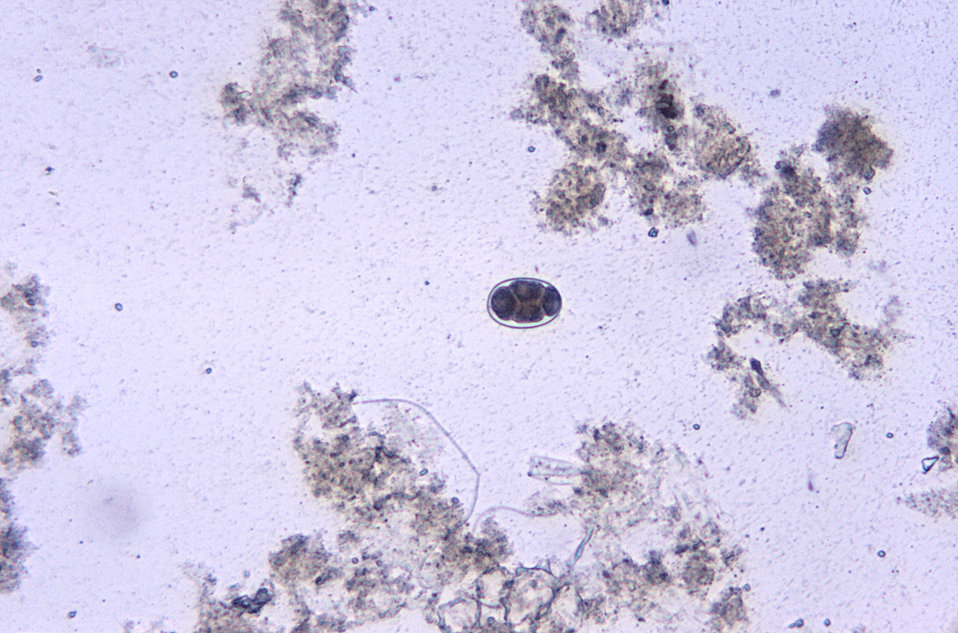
Egg of hookworm. Parasite.